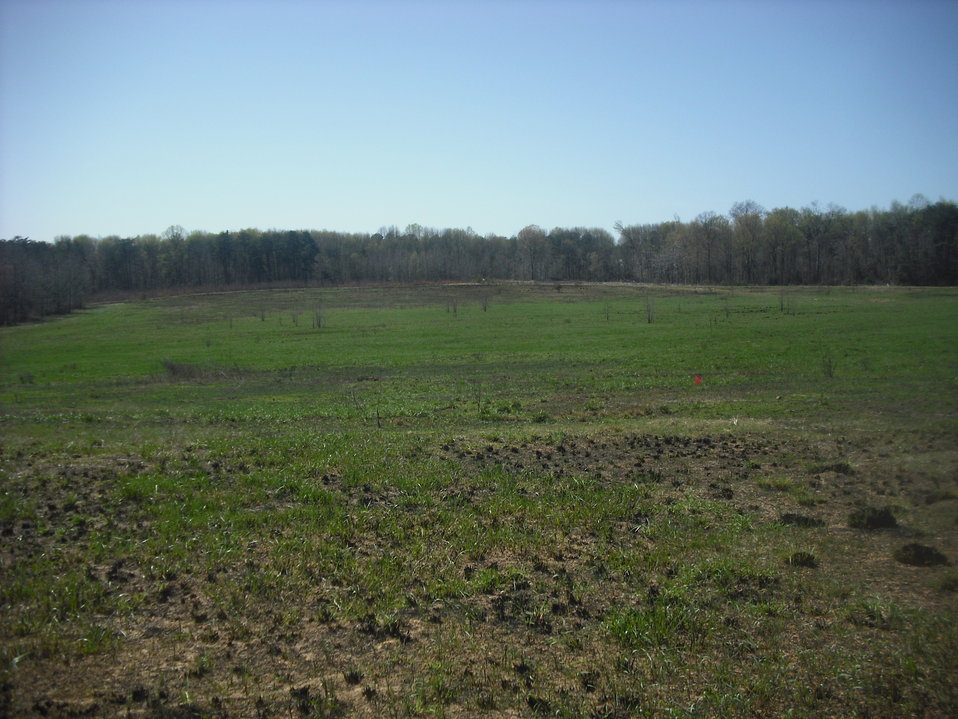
Green Two Weeks after Burn

Laurel, Maryland: Just two weeks after it was treated with a controlled burn, a field is green. The burn, at Patuxent Research Refuge, was to maintain native grasslands, remove woody vegetation, and control invasive species such as Korean Lespedeza.